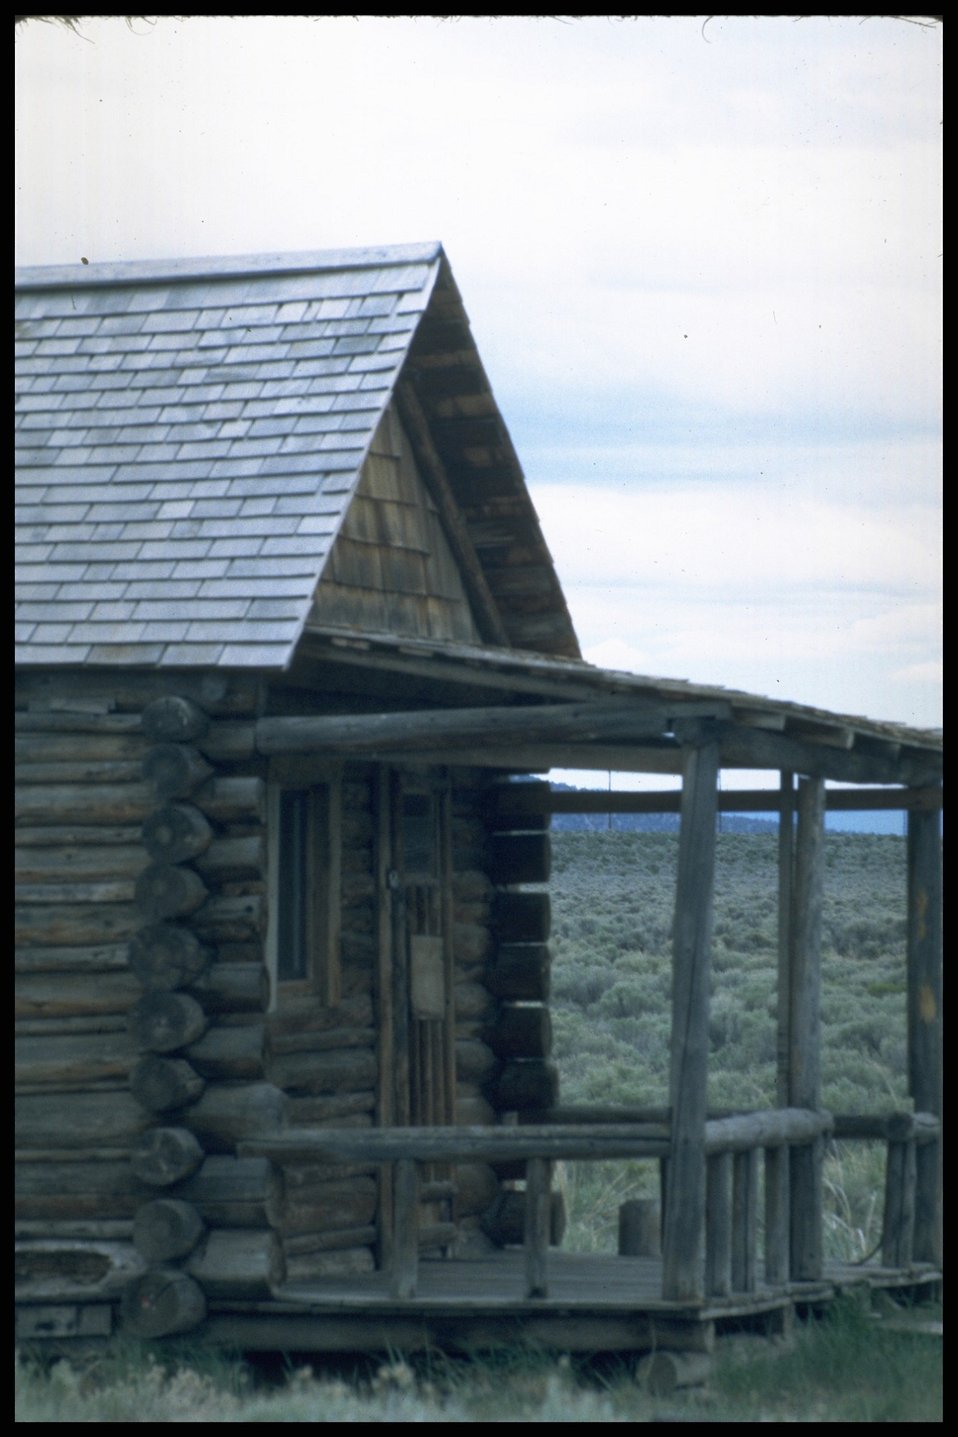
Old Cabin, Shirk Ranch, Lakeview District.